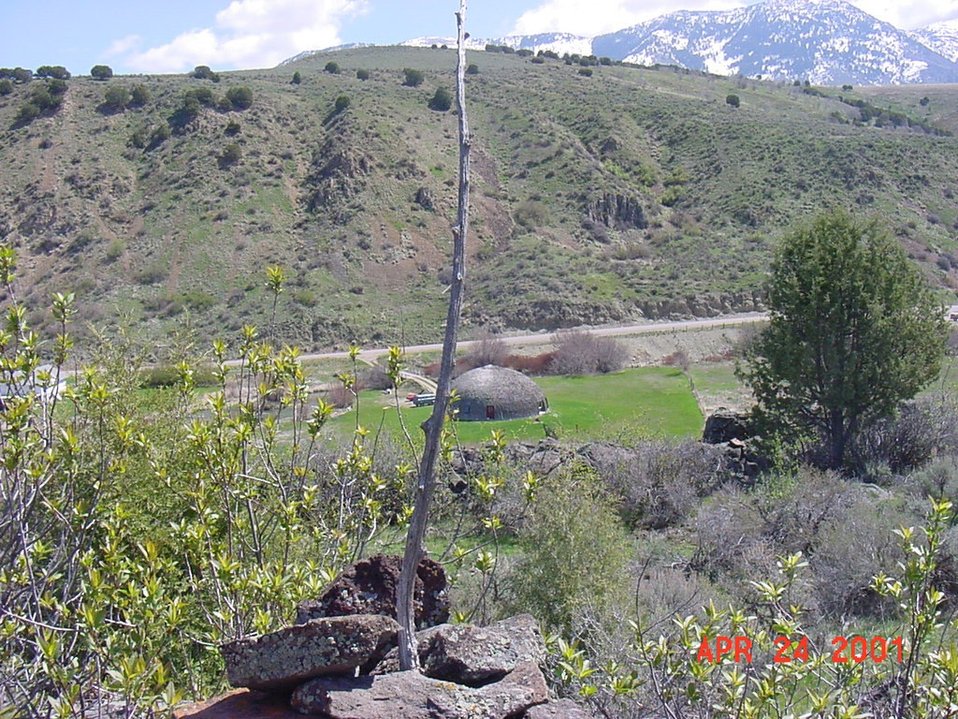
Cadastral Surveys Idaho Bureau of Land Management